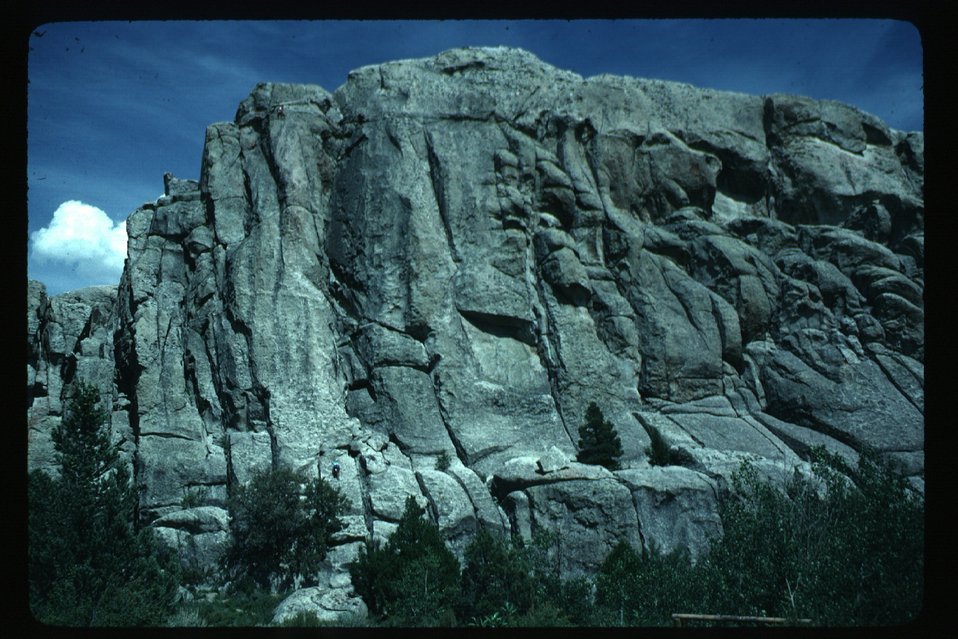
Rock climbing Burley City of Rocks Burley Field Office USRD Upper Snake River District